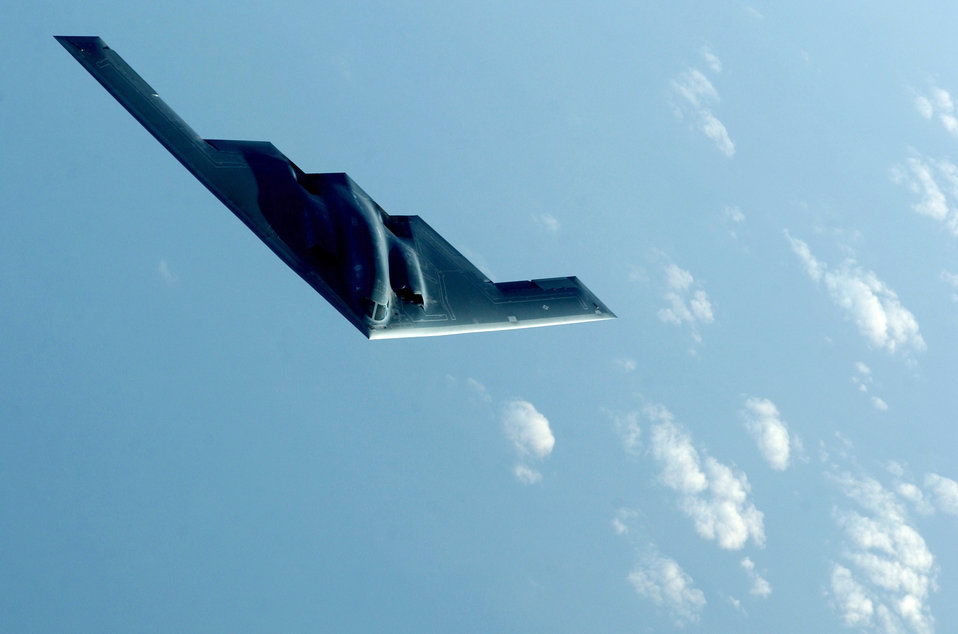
Spirit in the sky

OPERATION IRAQI FREEDOM -- A B-2 Spirit proceeds to an undisclosed location after flying a mission over Iraq in support of Operation Iraqi Freedom on March 27, 2003. Operation Iraqi Freedom is the multinational coalition effort to liberate the Iraqi people, eliminate Iraq's weapons of mass destruction and end the regime of Sadaam Hussein.